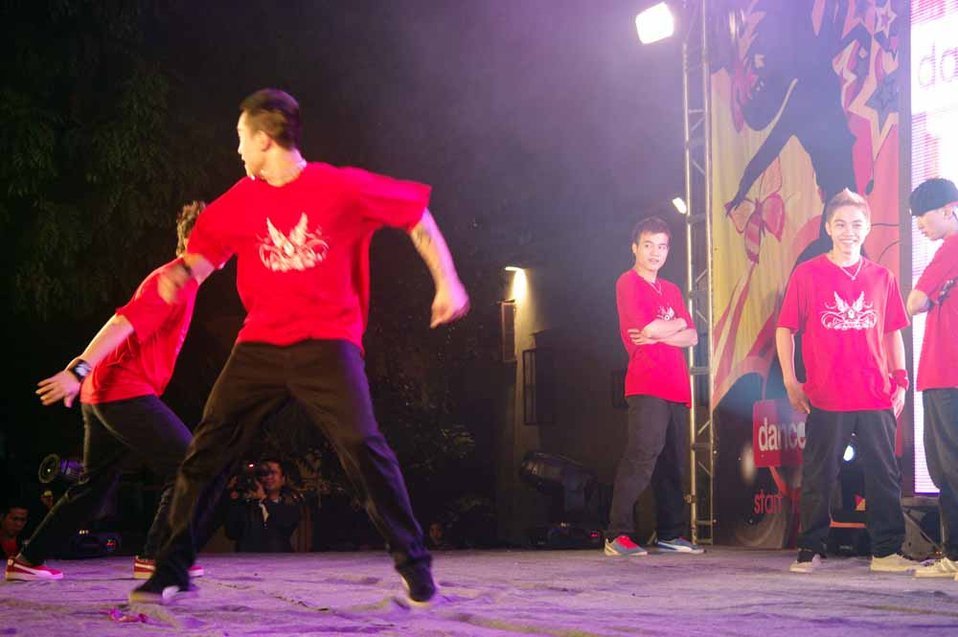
dance4life, Hanoi